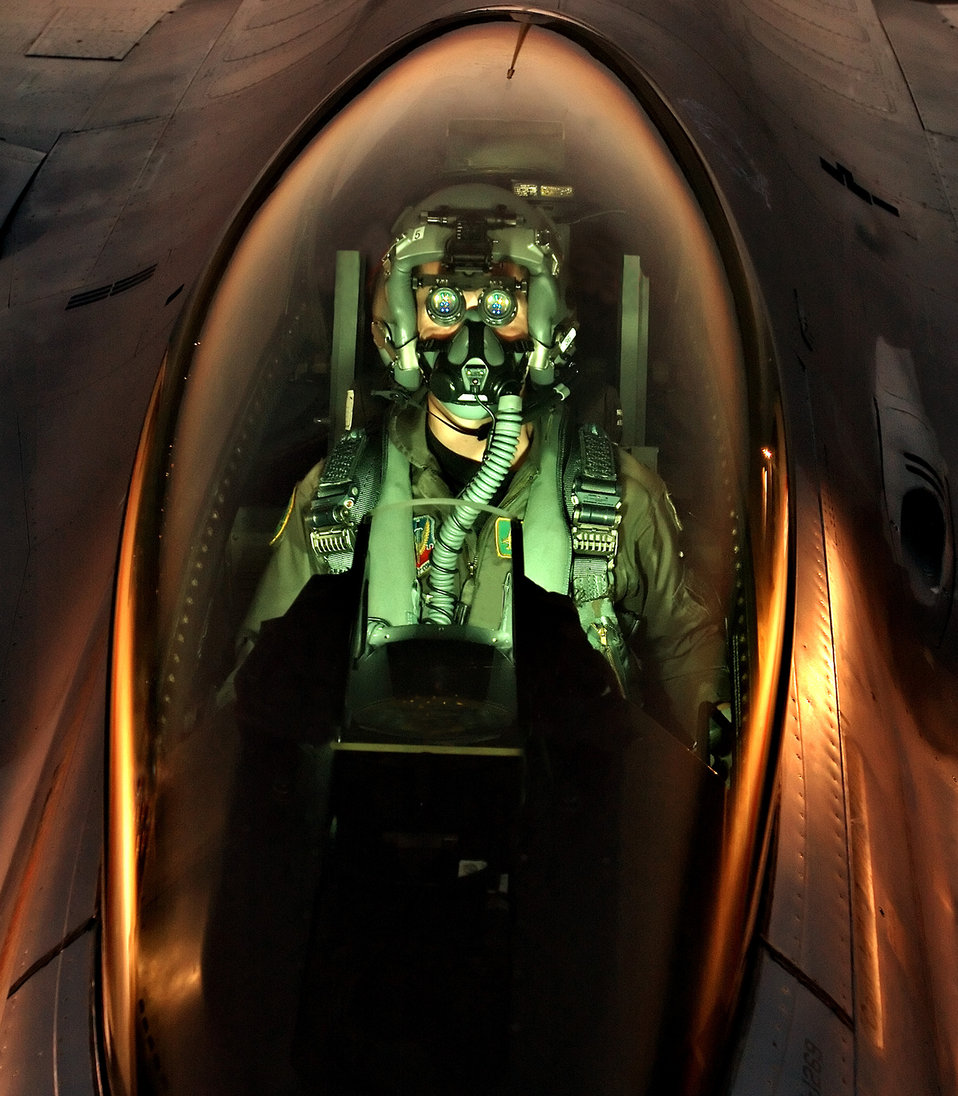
Night goggles

VERMONT (AFPN) -- An F16 Fighting Falcon pilot with the Vermont Air National Guard peers through his night vision goggles.